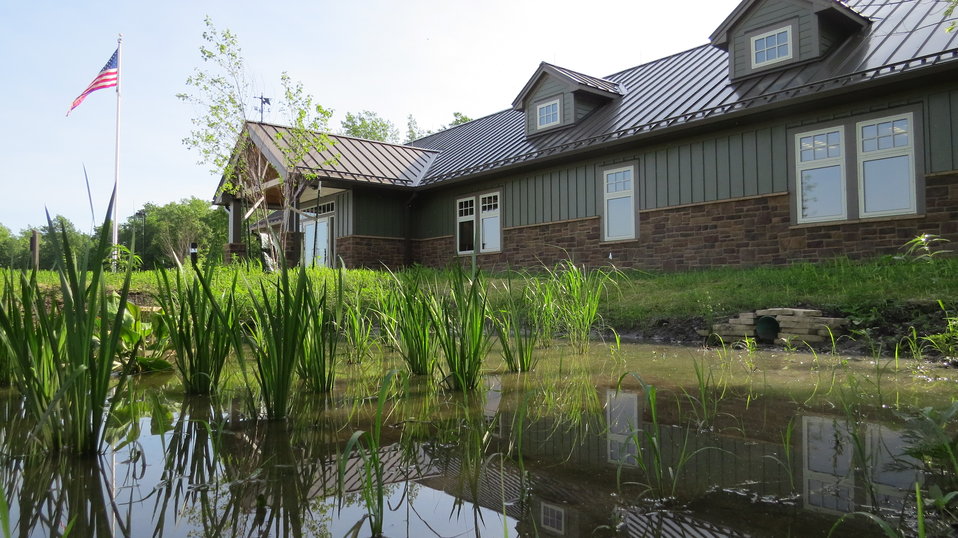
Port Louisa National Wildlife Refuge Headquarters and Visitor Center